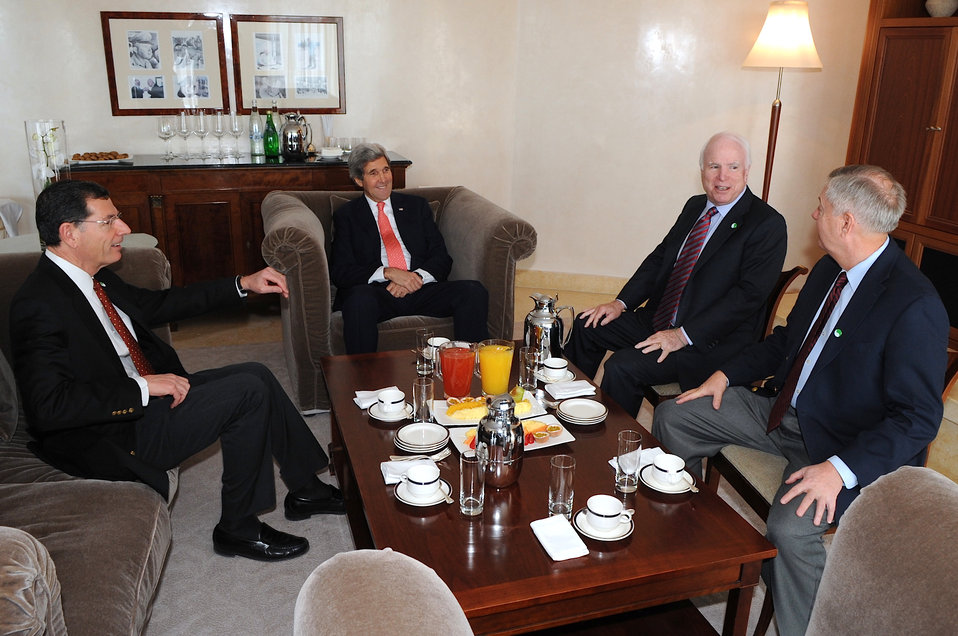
Secretary Kerry Meets With Senators McCain, Graham, Barrasso

U.S. Secretary of State John Kerry meets with U.S. Senators John McCain of Arizona, Lindsey Graham of South Carolina, and John Barrasso of Wyoming in Jerusalem on January 3, 2013, as they travel through the Middle East and Central Asia, and as he engages in peace talks.